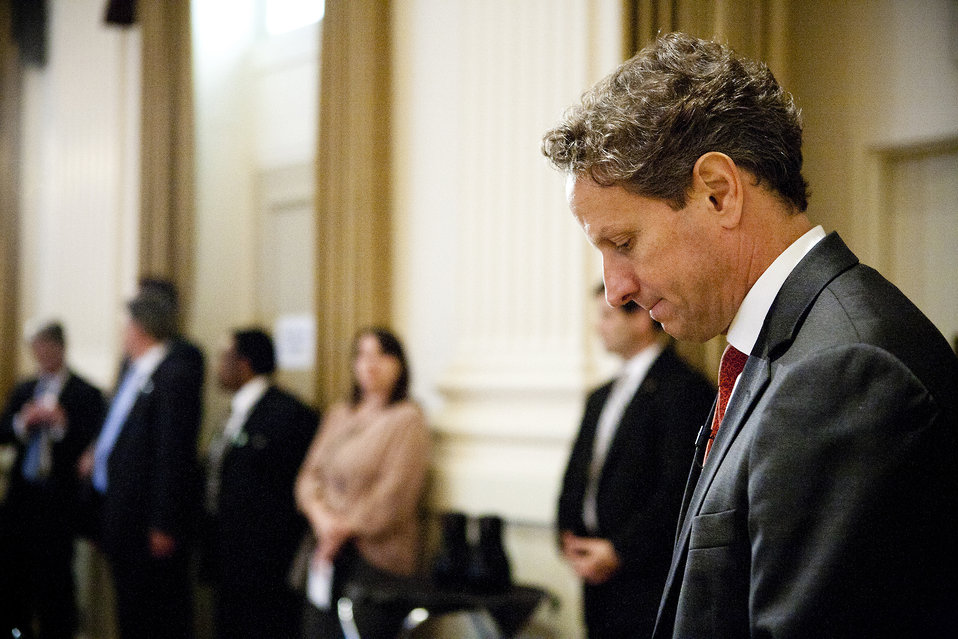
Secretary Geithner Speaks at the Portland City Club

Treasury Secretary Tim Geithner prepares to speak at the Portland City Club.